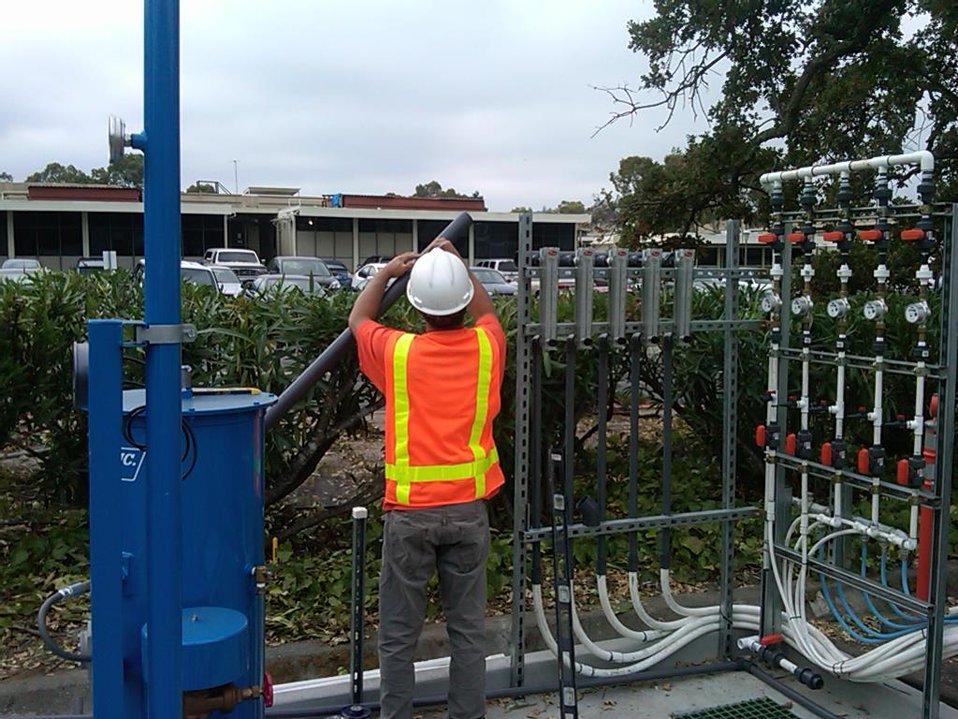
Recovery Act Supports Soil and Debris Cleanup, Groundwater Treatment at SLAC

Recovery Act workers are on track to remove more than 30,000 cubic yards of contaminated soil and debris at the SLAC National Accelerator Laboratory by September 2011.
The Recovery Act invested $14.3 million in legacy cleanup activities at SLAC. In addition to removing contaminated soil and debris that is shipped to local disposal facilities, Recovery Act workers installed three new groundwater treatment systems.